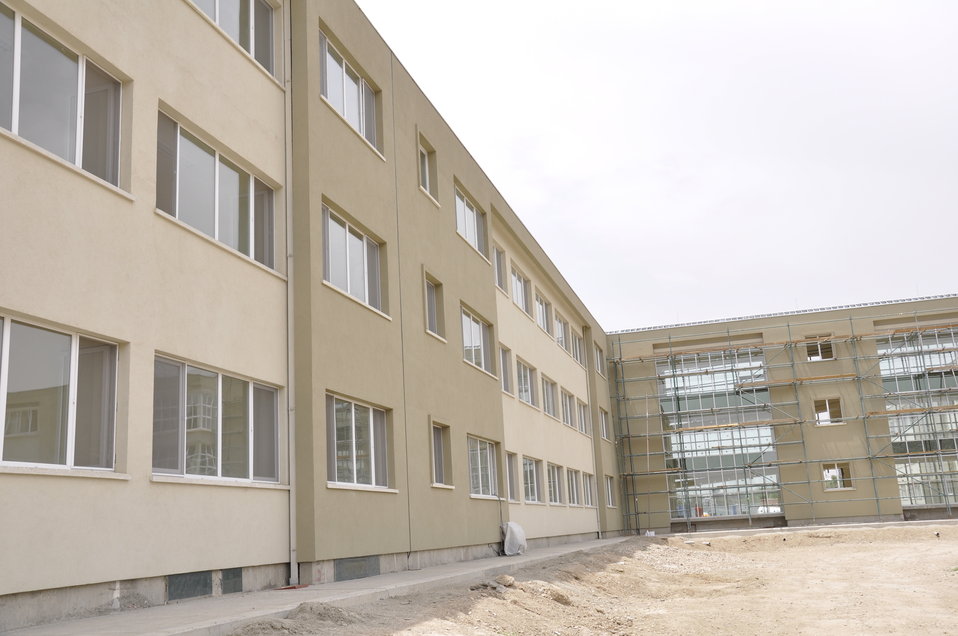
Ghazni High School in Kabul